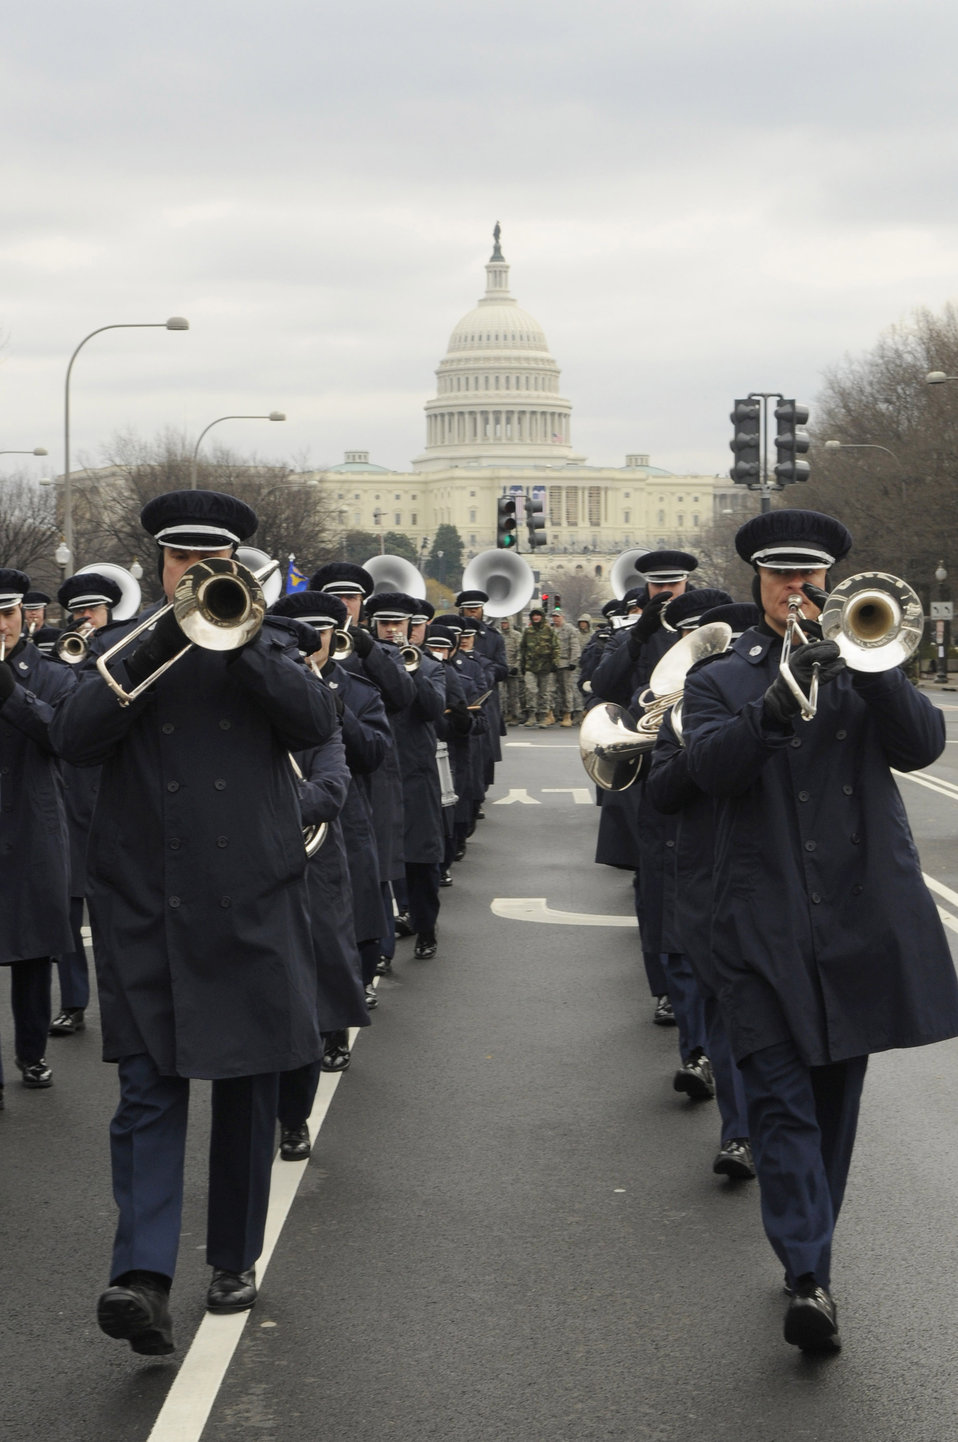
Practice makes perfect

Members of the Air Force Band march down Constitution Avenue during a practice run of the inauguration parade for President-elect Barack Obama Jan. 11 in Washington, D.C.